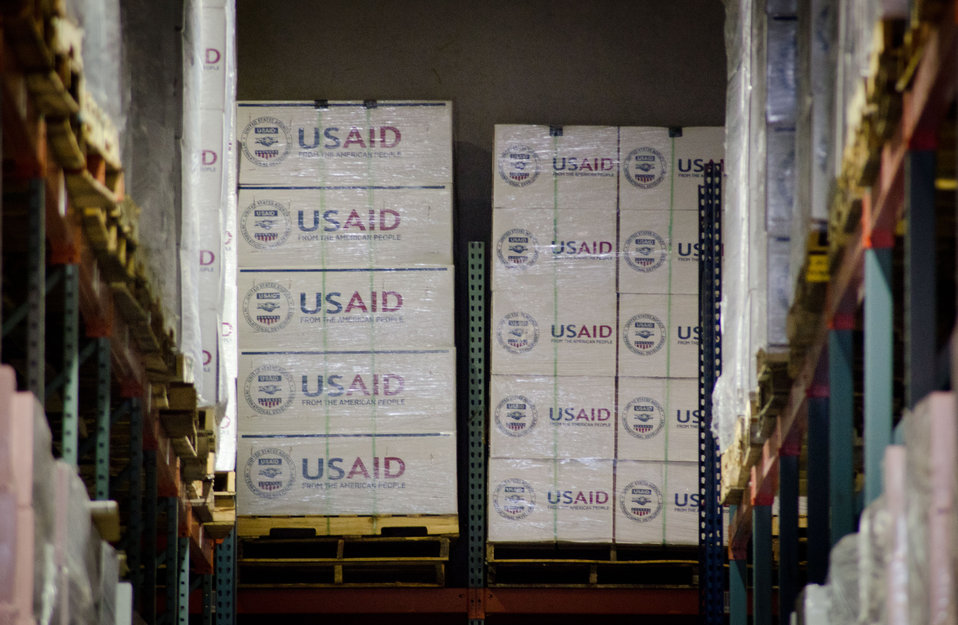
Crowley Logistics in Miami, FL on Friday, August 26, 2011 is one of three U.S. Agency for International Development (USAID) shipping and logistics facilities in the nation. In times of emergency humanitarian relief aid, they can respond with supplies delivered to aircraft at Miami International Airport within two hours. They utilize articulating forklifts, which hinge in the middle to store and retrieve pallets of supplies through narrow aisle ways. This allows for a higher density of stored supplies in the warehouse. Pallets of supplies are stacked three levels high. USAID provides humanitarian assistance through the Office of U.S. Foreign Disaster Assistance (OFDA). OFDA is the lead U.S. Government (USG) office charged with providing and coordinating USG humanitarian assistance in response to international emergencies and disasters. To achieve this, USAID works in cooperation with other USG offices such as the U.S. Department of Agriculture (USDA), and international humanitarian experts. The USDA provides food assistance to support emergency feeding programs in countries experiencing food shortages due to drought and civil conflict.